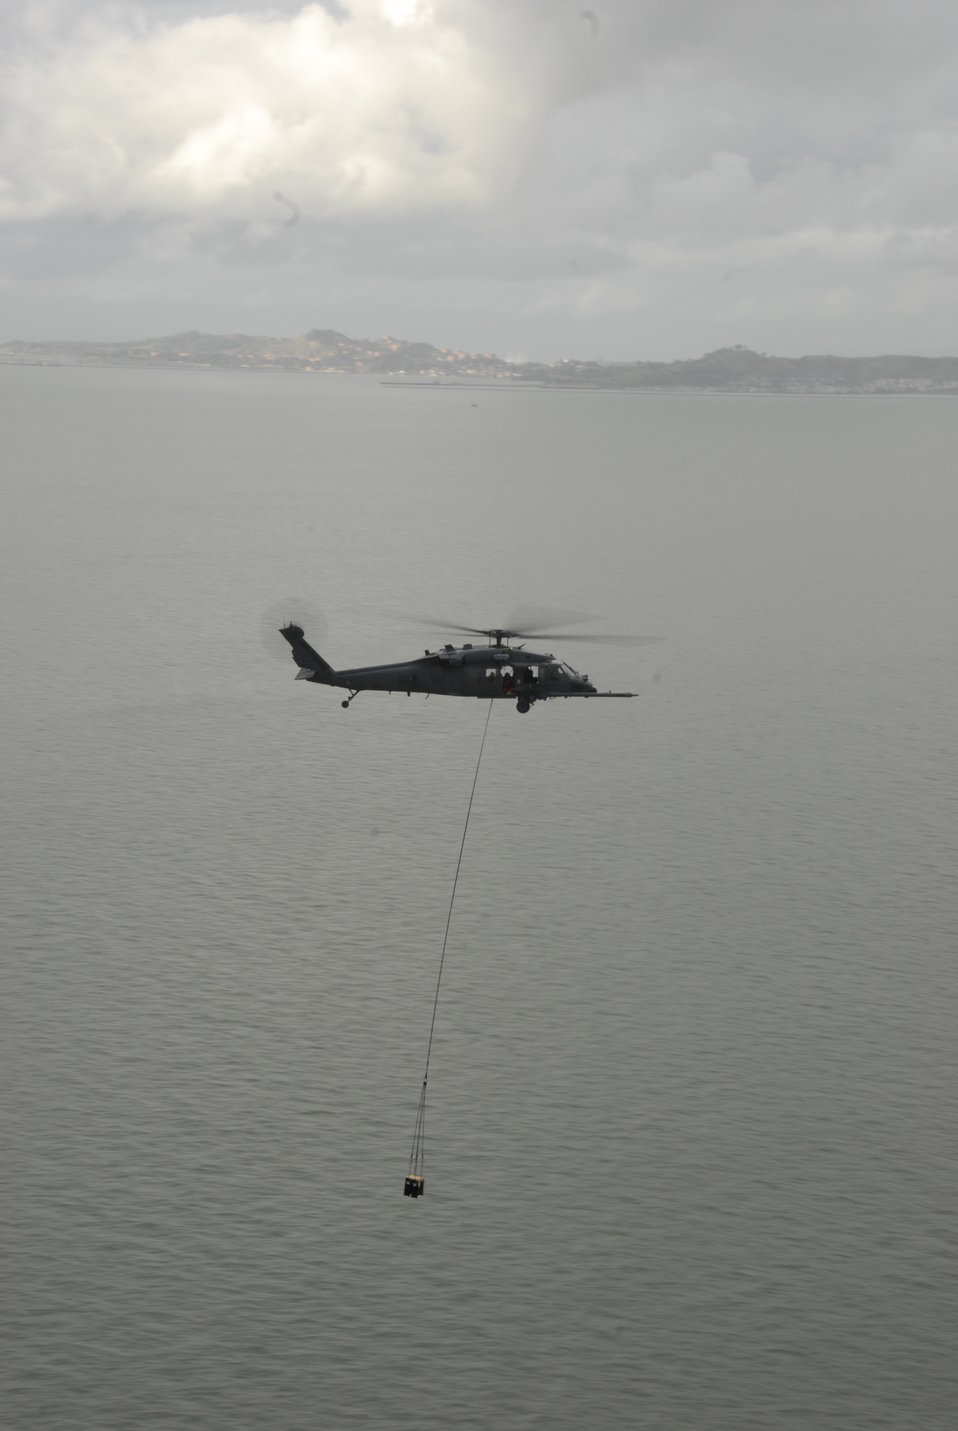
FARALLONS BATTERY MISSION

An HH-60G Pave Hawk helicopter from the California Air National Guard's 129th Rescue Wing at Moffett Federal Airfield, Calif., transports a cargo of photovoltaic batteries by sling. The unit is supporting the U.S. Fish and Wildlife Service by transporting the batteries to power a lighthouse and workshop at the FWS research facility on Farallon Island, which sits some 30 miles west of San Francisco.